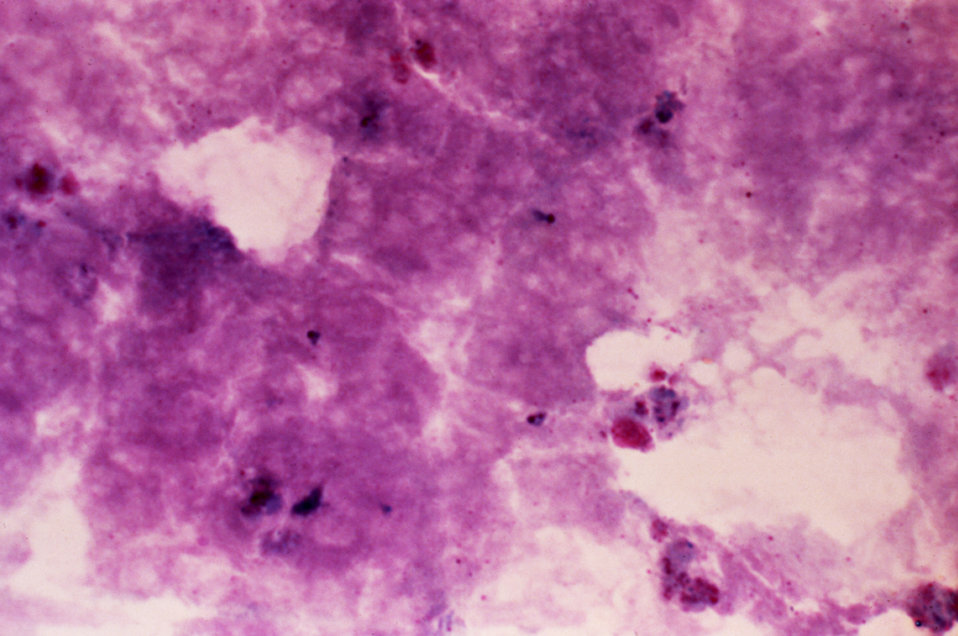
A Giemsa stain of a blood film from an infected human was used to identify the parasite Babesia microti.